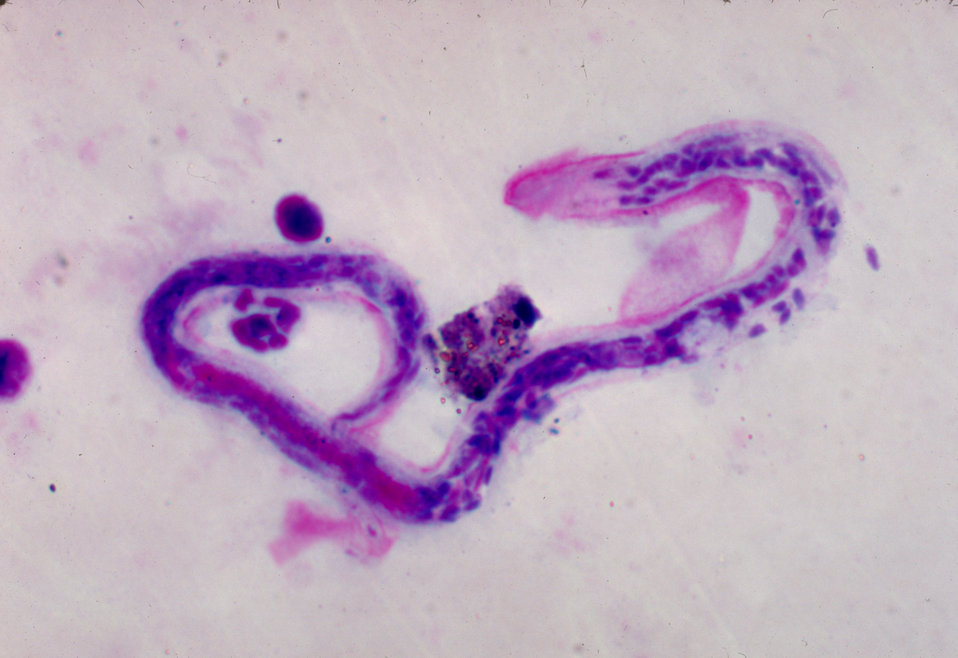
This photomicrograph shows the inner body and cephalic space of a Brugia malayi microfilaria in a thick blood smear.